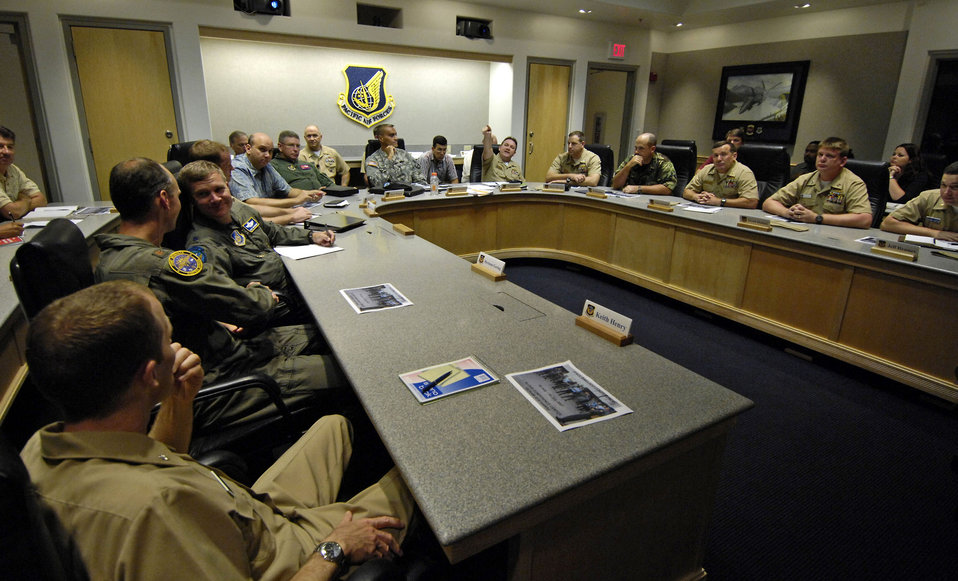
Missile defense experts meet in Hawaii

Members of the Joint Interface Control Officer Conference discuss standardized guidance and procedures July 16 at Hickam Air Force Base, Hawaii. The conference is a four-day event involving joint interface control officers and ballistic missile defense experts from across the Pacific Command to focus on integrating assets and capabilities to form a stronger alliance and interoperability for the future.